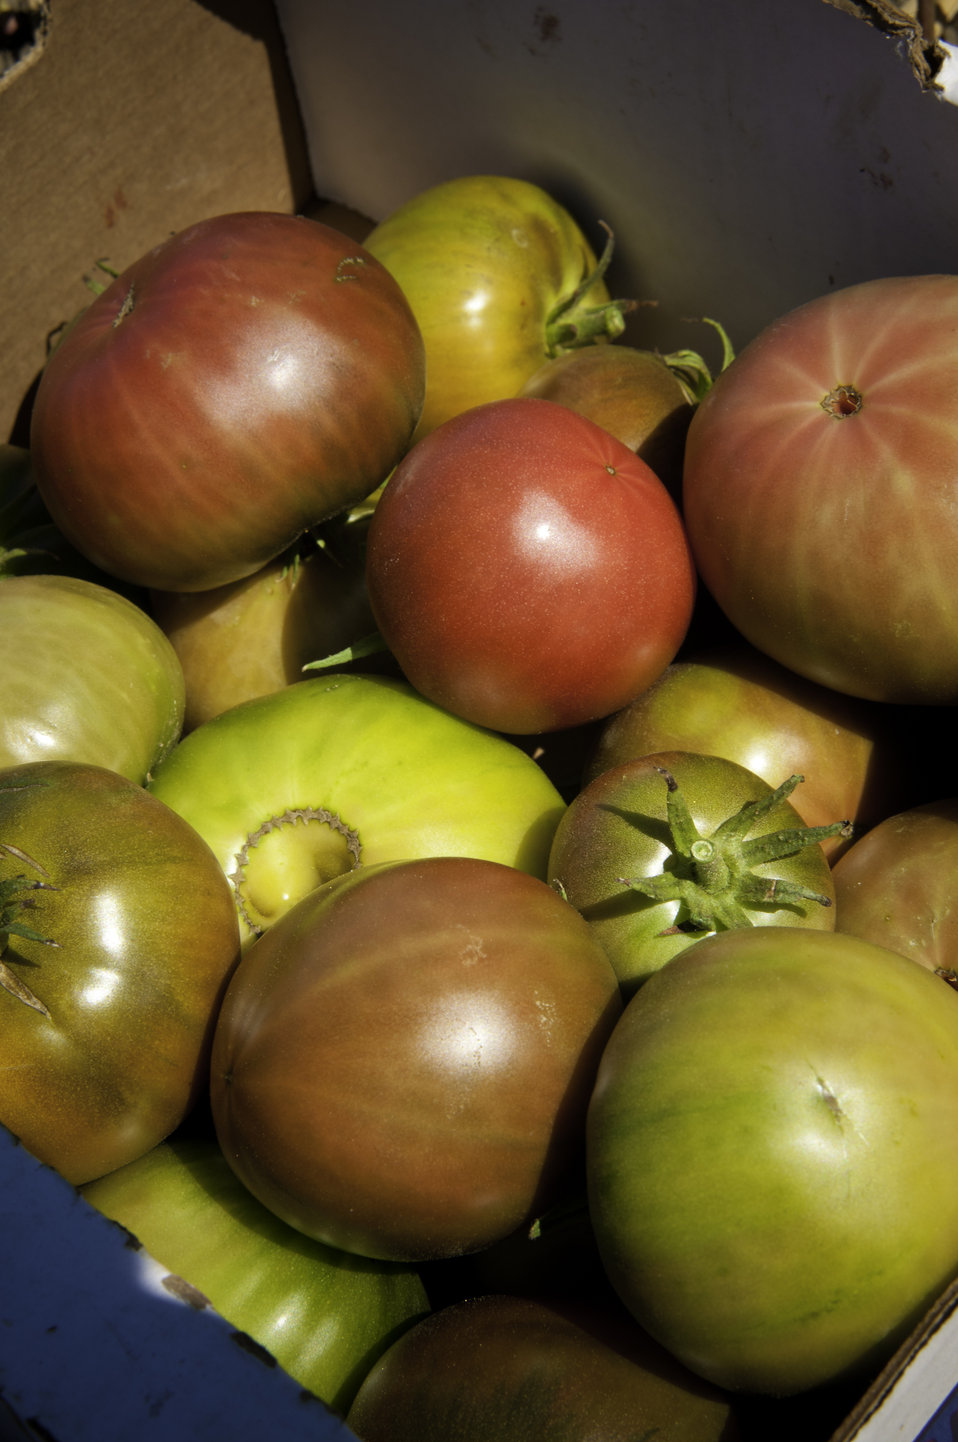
Tomatoes are harvested on Uesugi Farms in Gilroy, CA on Wednesday, Aug. 28, 2013.